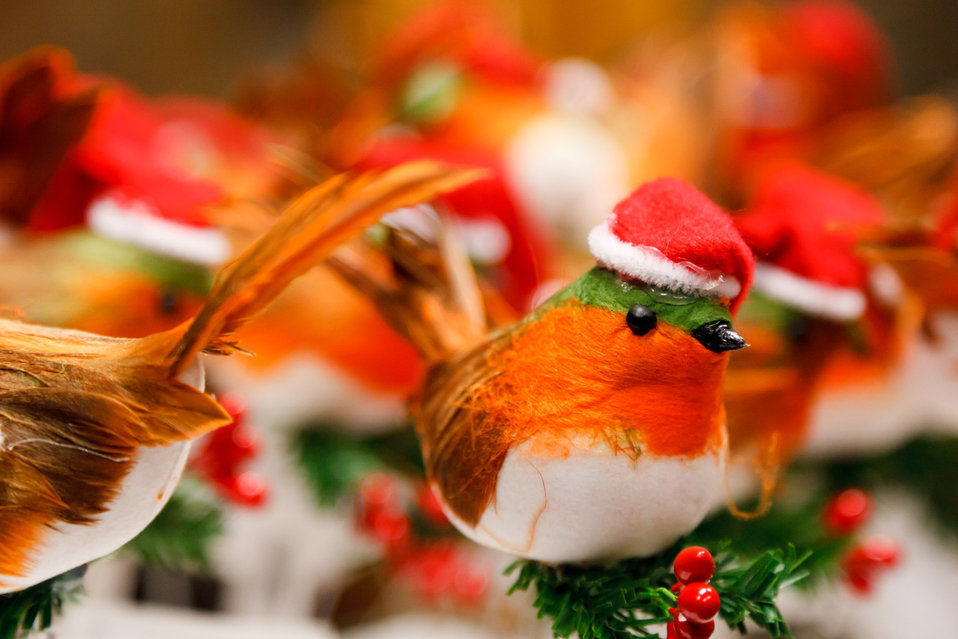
Christmas bird decoration

Colorful christmas robin bird with a santa hat.